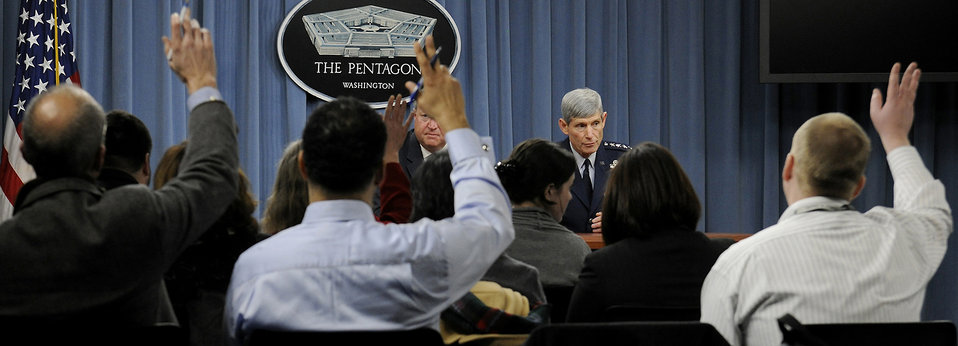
AF Force Structure Overview

Secretary of the Air Force Michael Donley and Air Force Chief of Staff Gen. Norton Schwartz take questions on the Air Force's Force Structure overview during a Pentagon press briefing Feb. 3, 2012.